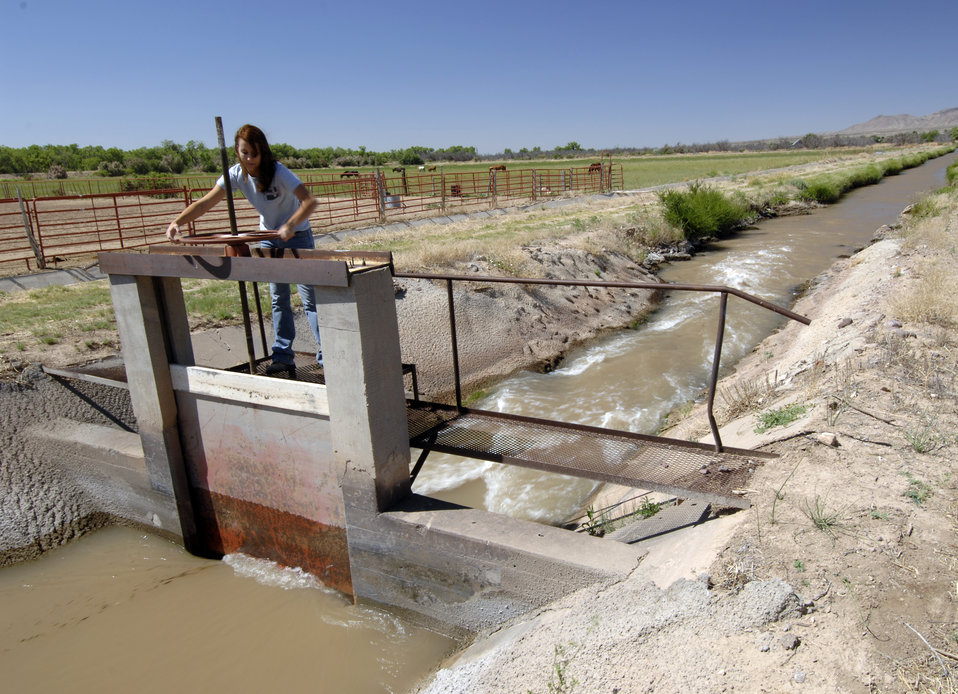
The U.S. Department of Agriculture's (USDA) Cooperative State Research, Education, and Extension Service (CSREES) administers the Rio Grande Basin Initiative (RGBI) in New Mexico in cooperation with the Texas AgriLife Extension Service, Texas AgriLife Research, the College of Agriculture and Life Sciences at Texas A&M University, and New Mexico State University on June 2, 2008. This project addresses water management throughout the Rio Grande Basin, bringing together research, extension, and education efforts to address local, state, regional, national, and international water concerns. Unlike the cement-lined canals that prevent leeching, the earthen acequias allow seepage into groundwater. Acequias are the traditional irrigation ditches or canals in New Mexico. Research has found that the seepage is not wasted but has an added benefit to the environment. The seepage promotes riparian buffers, cleaner groundwater and a more efficient storage of water.